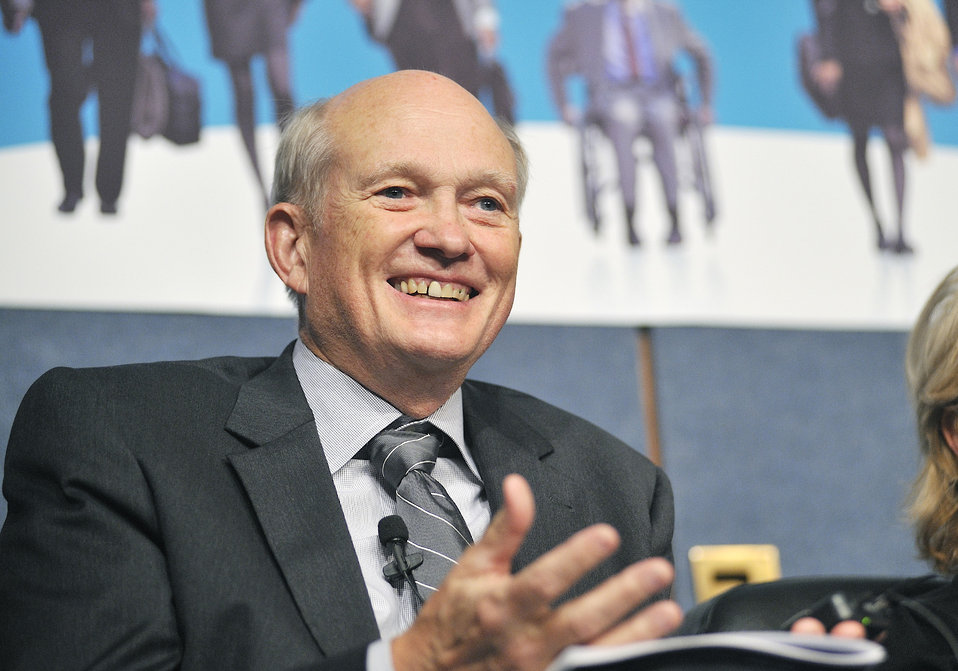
Dr. Bill Brinkman, Acting Under Secretary for Science, participates in the panel discussion.